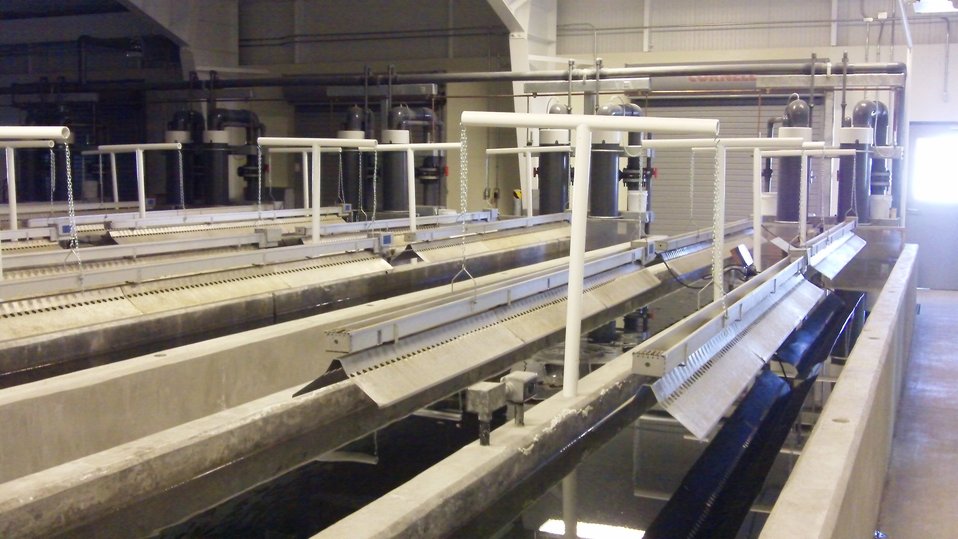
Jackson Hole National Fish Hatchery

The new tank room at the Jackson Hole NFH.